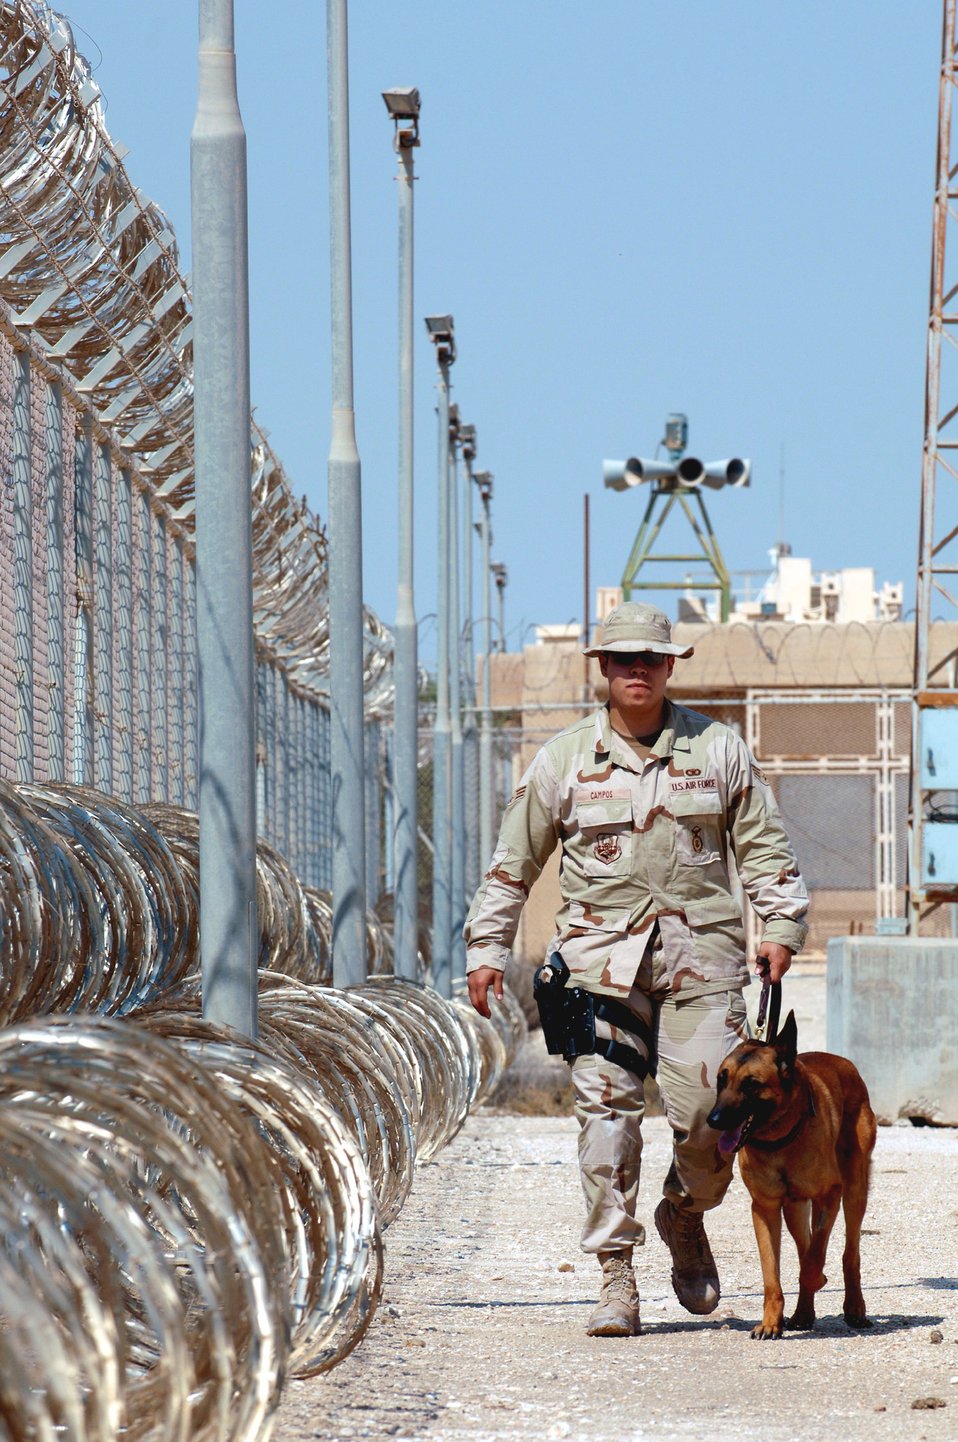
Partners in the desert

SOUTHWEST ASIA (AFPN) -- Senior Airman Martin Campos patrols the fence line at a deployed location with his military working dog, Rico, Feb. 24. Airman Campos and Rico, a Belgian Malinois, are with the 379th Expeditionary Security Forces Squadron.